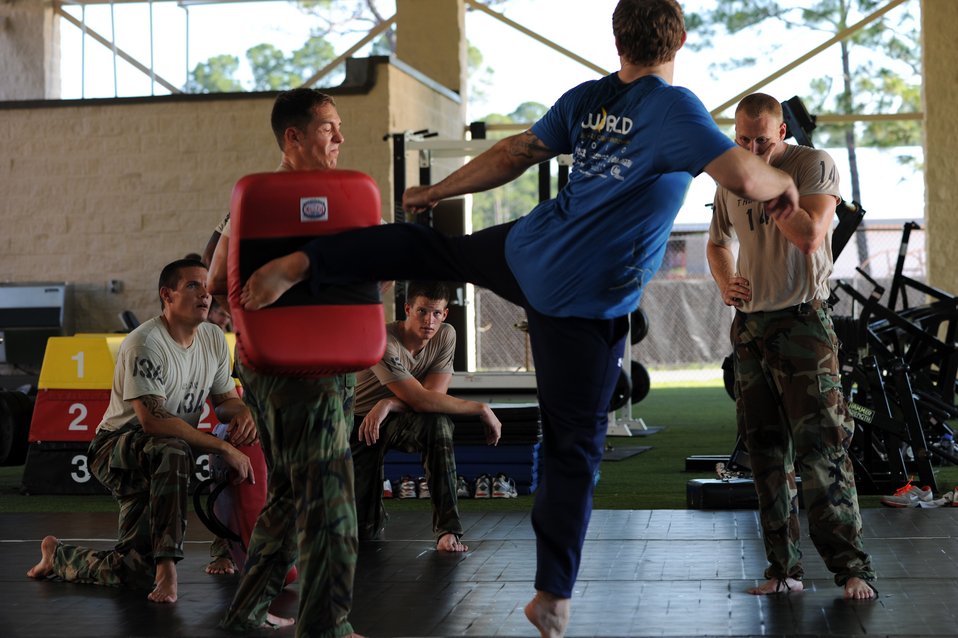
UFC fighter helps train battlefield Airmen

Airmen from the Special Tactics Training Squadron receive a combative class taught by Ultimate Fighting Championship Middleweight Alan Belcher June 8, 2010, at Hurlburt Field, Fla.